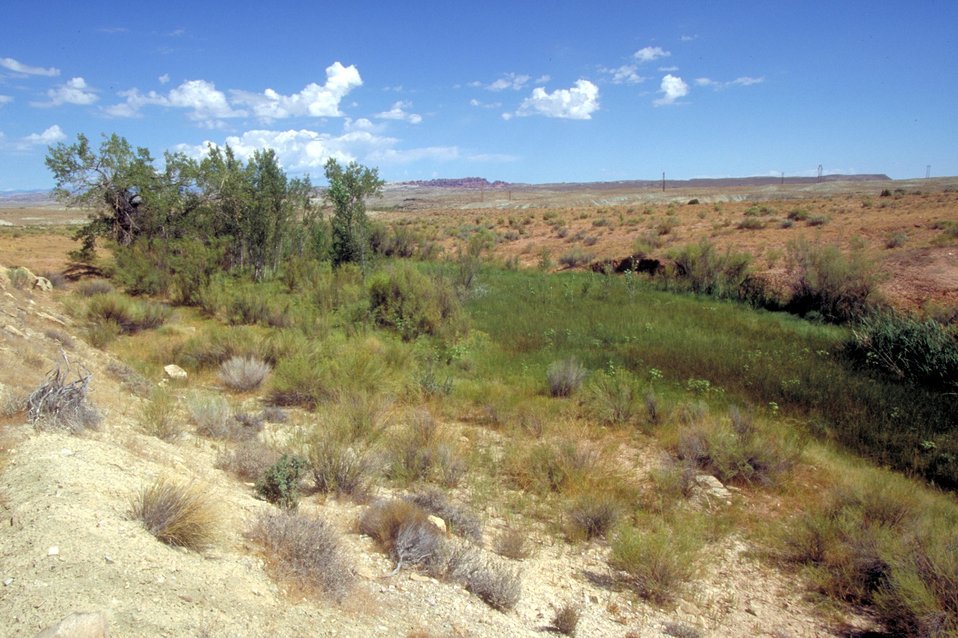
Riparian area next to Halfway House Stage Station near Moab, Utah.